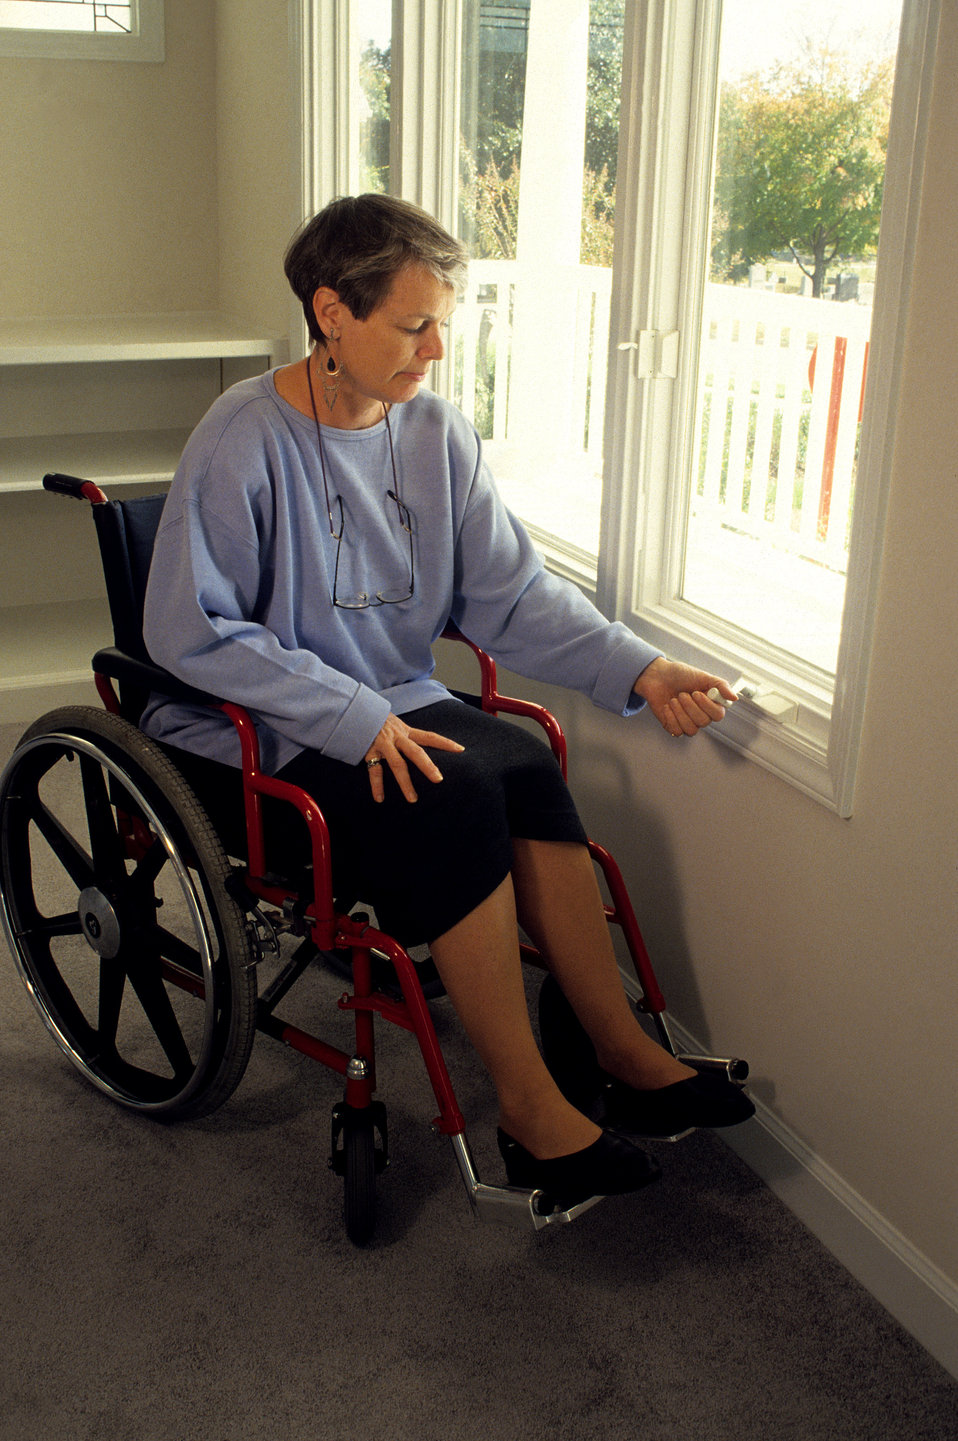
In this 1995 image, a woman seated in a wheelchair was operating a manual hand crank on a casement window. Because the crank was located on the window sill, which was no more thean thirty-six inches above floor level, it not only facilitated ease of use for wheelchair-seated individuals, but very short people as well. Single or double hung windows, by comparison, require two hands, considerable force, and a long, high reach-range.